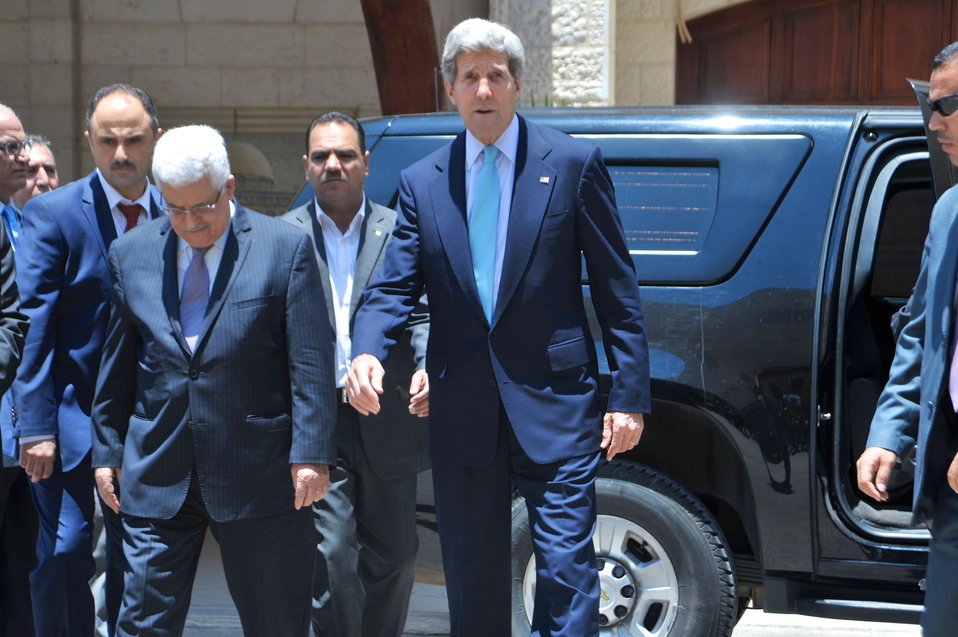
Secretary Kerry, Palestinian Authority President Abbas Meet Reporters

U.S. Secretary of State John Kerry and Palestinian Authority President Mahmoud Abbas approach a gaggle of reporters after concluding their meeting in Ramallah, West Bank, on June 30, 2013.